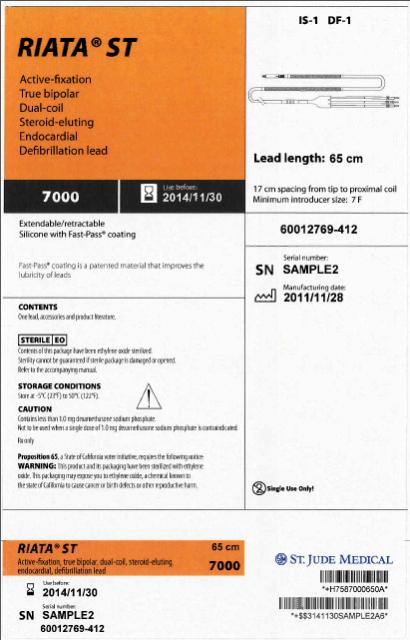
RECALLED - Silicone Endocardial Defibrillation Leads

December 14, 2011 - Product Recall - FDA Classifies Voluntary Physician Advisory Letter on Riata and Riata ST Silicone Defibrillation Leads as Class I Recall (URGENT MEDICAL DEVICE ADVISORY).